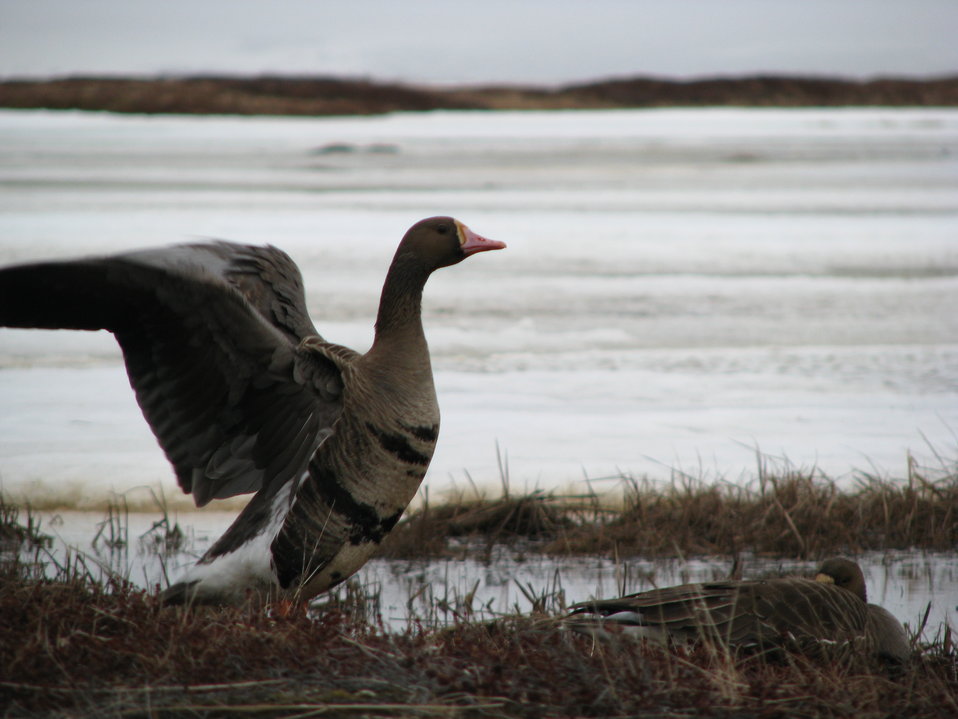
White fronted goose

USFWS Yukon Delta NWR
White fronted goose is showing off its spectacular speckled belly. Hence, the nickname speckled bellies.